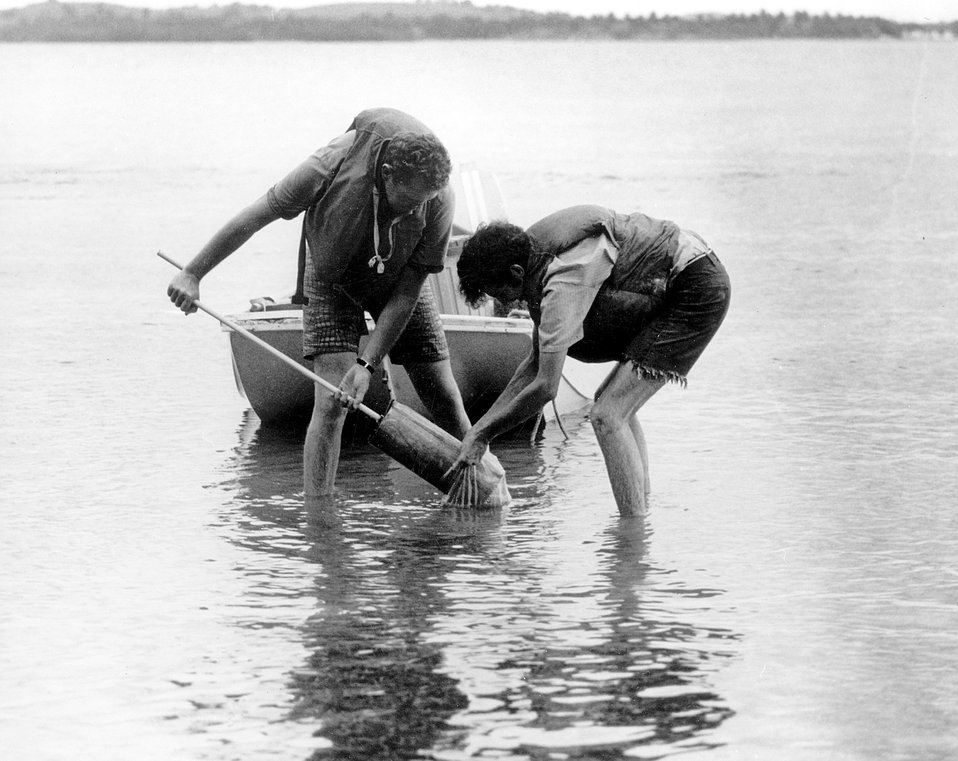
A hand auger technique used by researchers of the U.S. Atomic Energy Commission's Puerto Rico Nuclear Center in obtaining bottom samples from a turtle grass bed. Circa 1972.